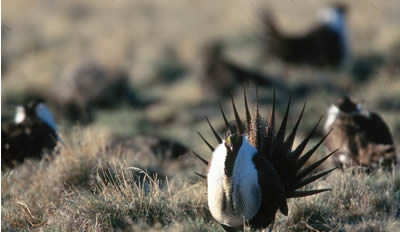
Sagegrouse - Sheldon NWR

Greater Sage-grouse prefer habitat with gentle hills and valleys where openings of low sage intersperse big sagebrush patches.